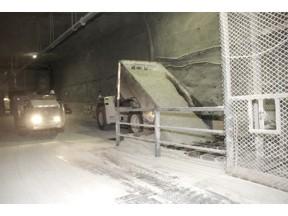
WIPP Underground Truck

At WIPP, an underground dump truck empties at the Salt Handling Shaft for the 2,150-foot trip to the surface.